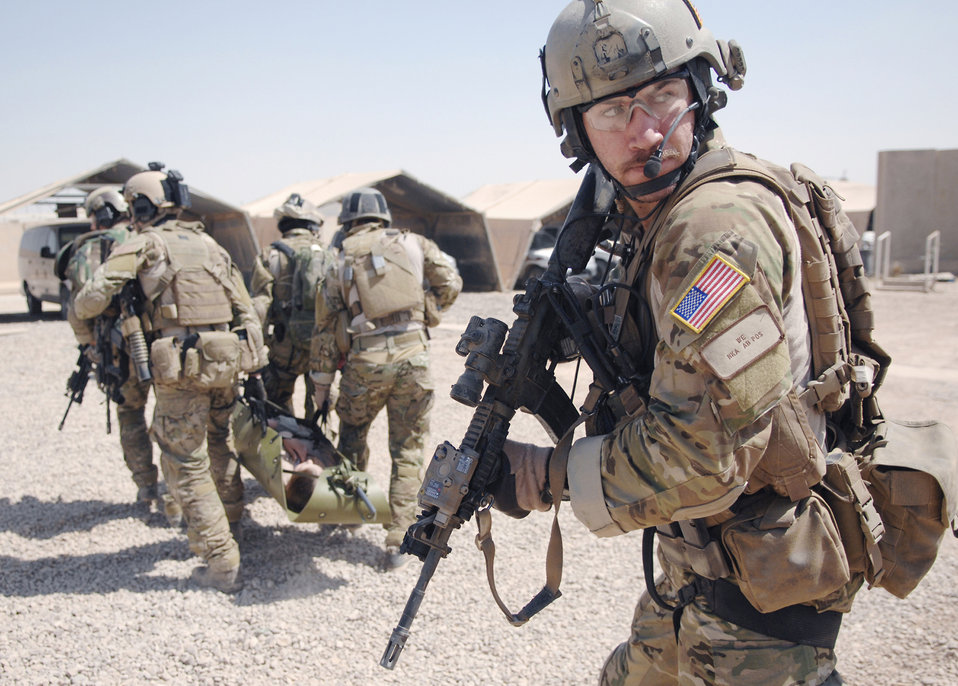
Pararescuemen train at Joint Base Balad

Senior Airman Asher Woodhouse provides rear security as the rest of his team carries a mock casualty patient toward an evacuation point during a training exercise Aug. 2 at Joint Balad Base. The training exercise is a requirement for Airman Woodhouse's five-level upgrade training. Airman Woodhouse is a pararescueman assigned to the 64th Expeditionary Rescue Squadron.